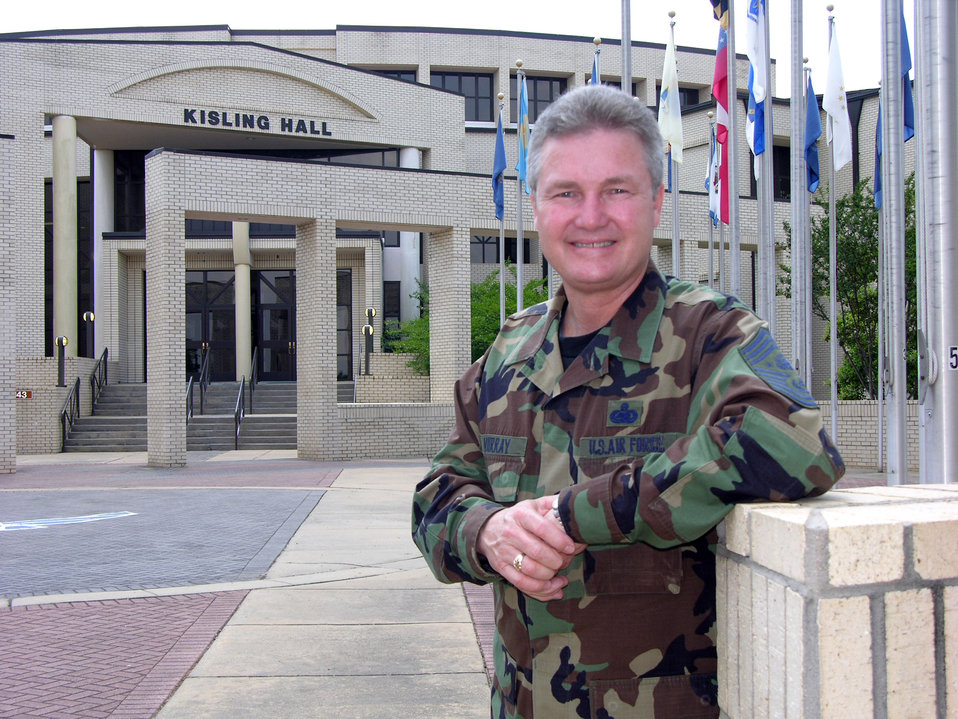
Chief Murray reflects on 29-year career

Chief Master Sgt. of the Air Force Gerald R. Murray stands in front of the Senior NCO Academy's Kisling Hall at Maxwell-Gunter Air Force Base, Ala.